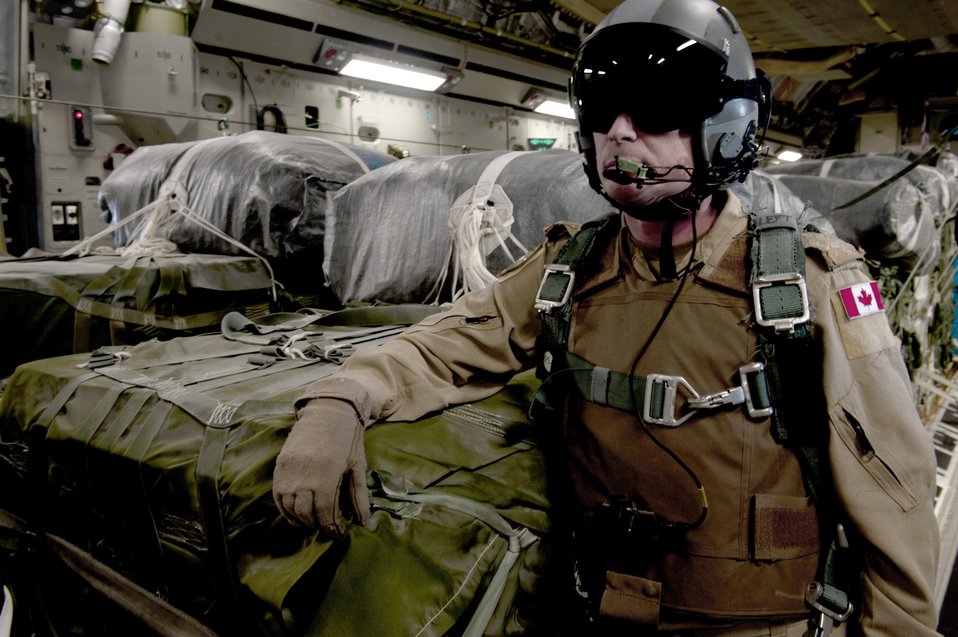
Air delivery cargo drop

David Daly, a Canadian air force warrant officer, prepares to release air delivery cargo from a C-17 Globemaster III Mar. 3, 2011, over Afghanistan, to remote operating bases in the region. Mr. Daly is a loadmaster assigned to the 816th Expeditionary Airlift Squadron as part of an exchange program between the U.S and Canada.